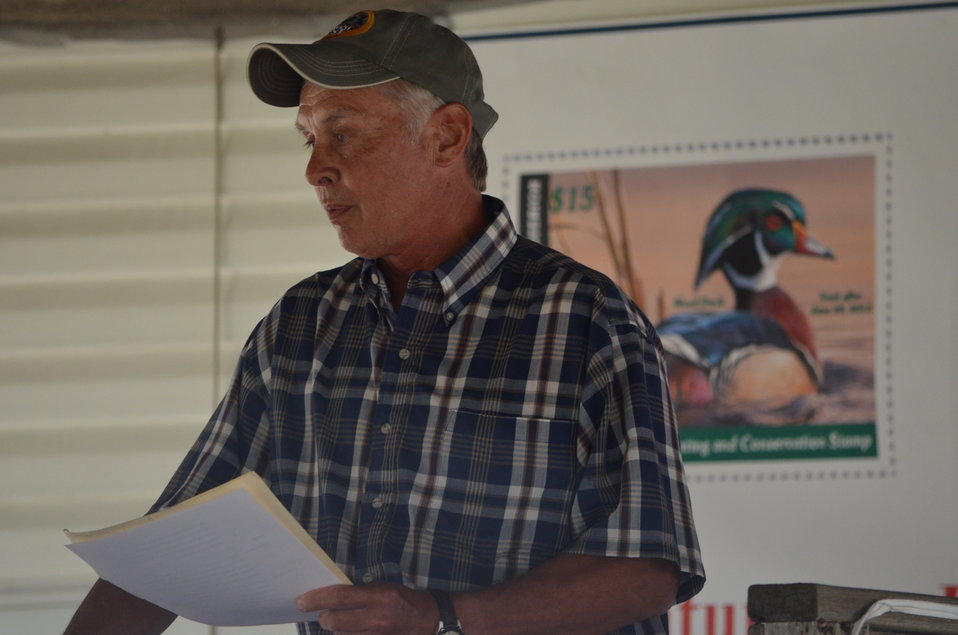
Event emcee Bill Hildebrand welcomes audience to 2012 Federal Duck Stamp Home State ceremony honoring wildlife artist and Duck Stamp winner Joe Hautman.